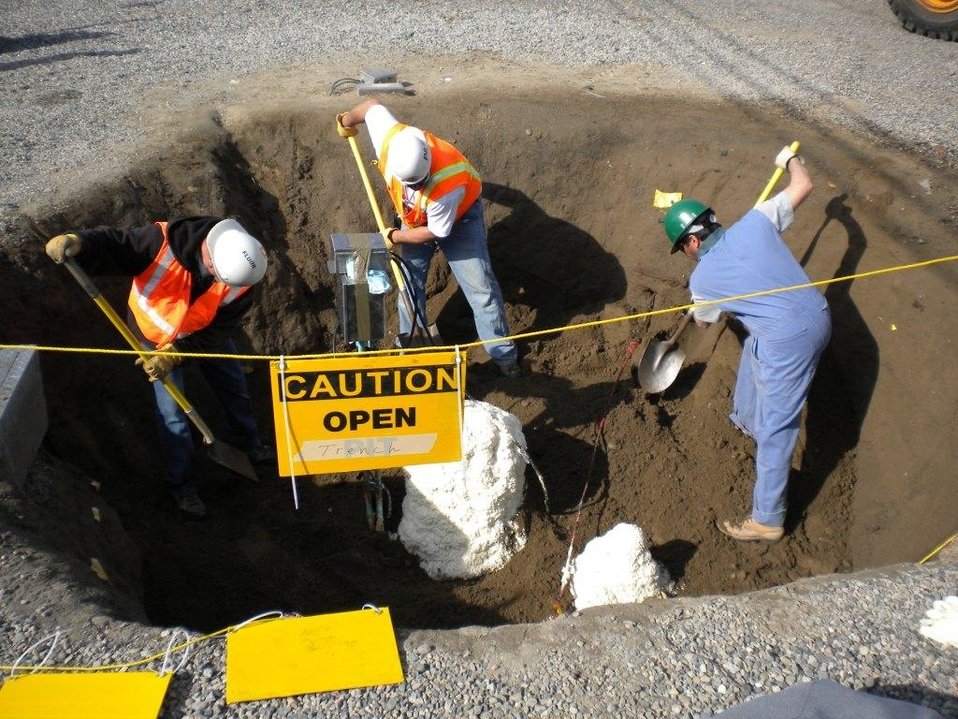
Waste Feed Infrastructure Upgrade: clean out box (COB) removal